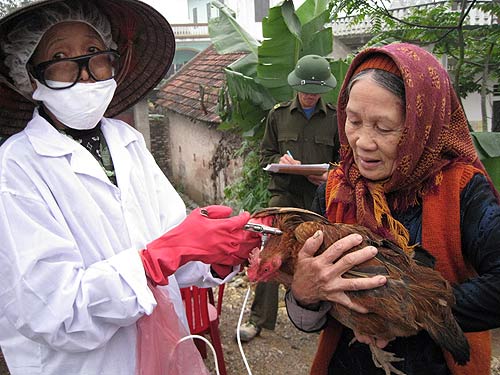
USAID supports the Government of Vietnam's efforts to control avian influenza in Vietnam.

A poultry farmer in Vietnam's Ha Nam Province has her chicken vaccinated to help curb the spread of bird flu.